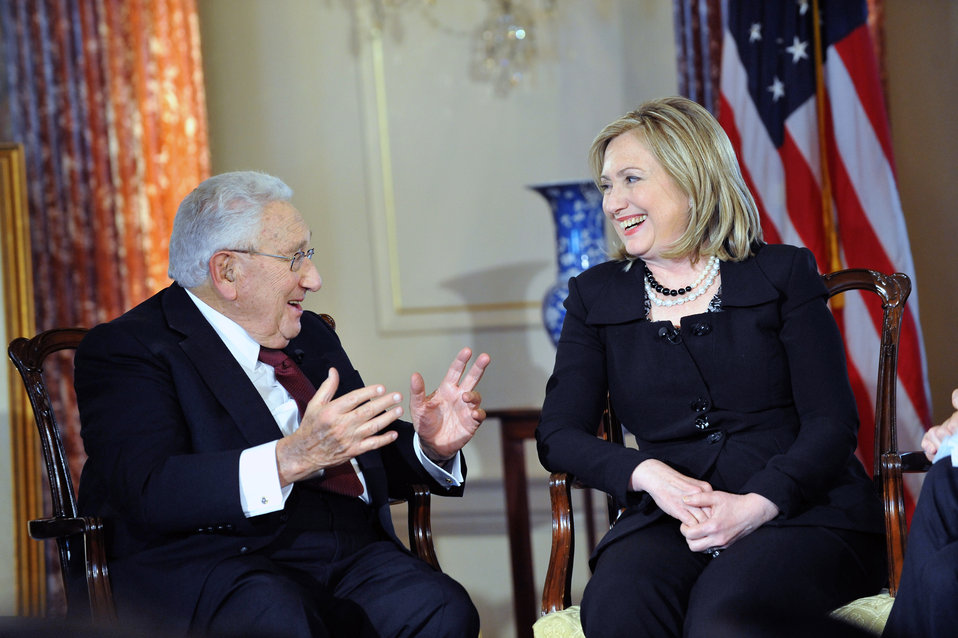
Secretary Clinton and Former Secretary Kissinger Film 'Conversations on Diplomacy, Moderated By Charlie Rose'

U.S. Secretary of State Hillary Rodham Clinton and former U.S. Secretary of State Henry Kissinger film, 'Conversations on Diplomacy, Moderated by Charlie Rose,' at the U.S. Department of State in Washington, D.C., on April 20, 2011.